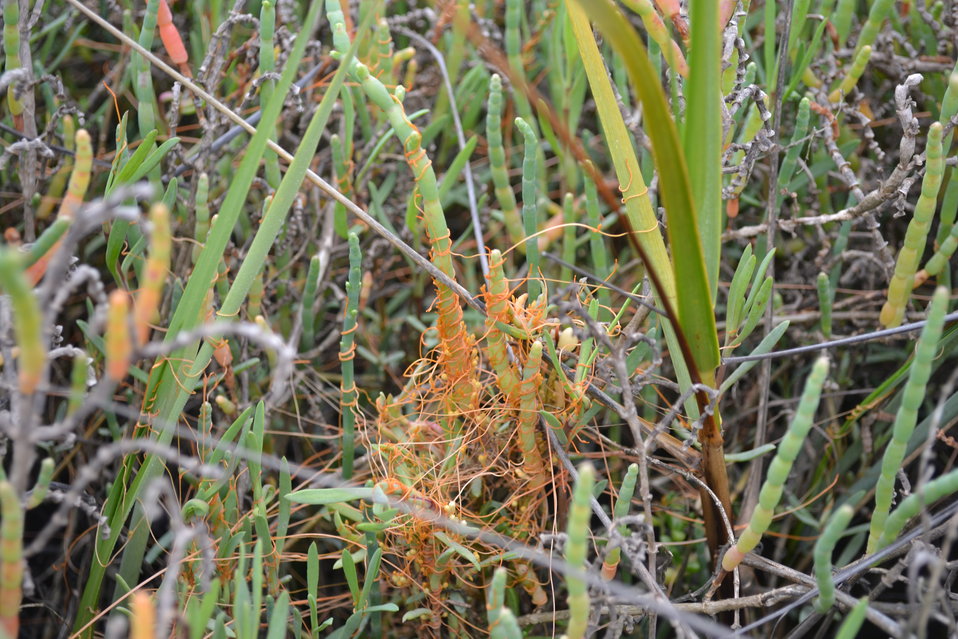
Salt-Marsh Dodder (Cuscuta pacifica var. pacifica) growing on pickleweed

Salt-marsh dodder is an annual parasite the flowers tiny white flowers from May to September